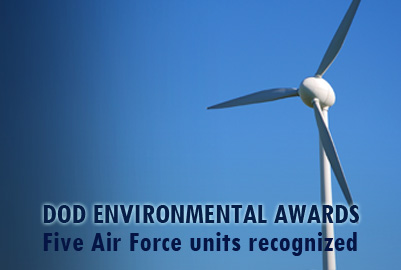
DOD Environmental awards